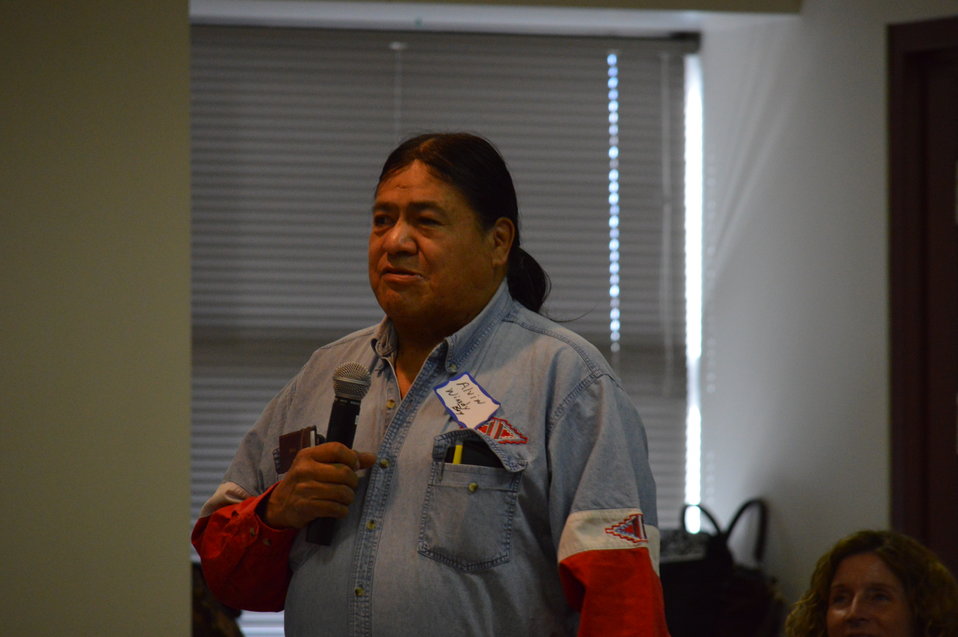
Eagle Summit III

Alvin Windy Boy's opening remarks at the Eagle Summit III in Denver, Colorado on March 20, 2014 at the Rocky Mountain Arsenal National Wildlife Refuge.